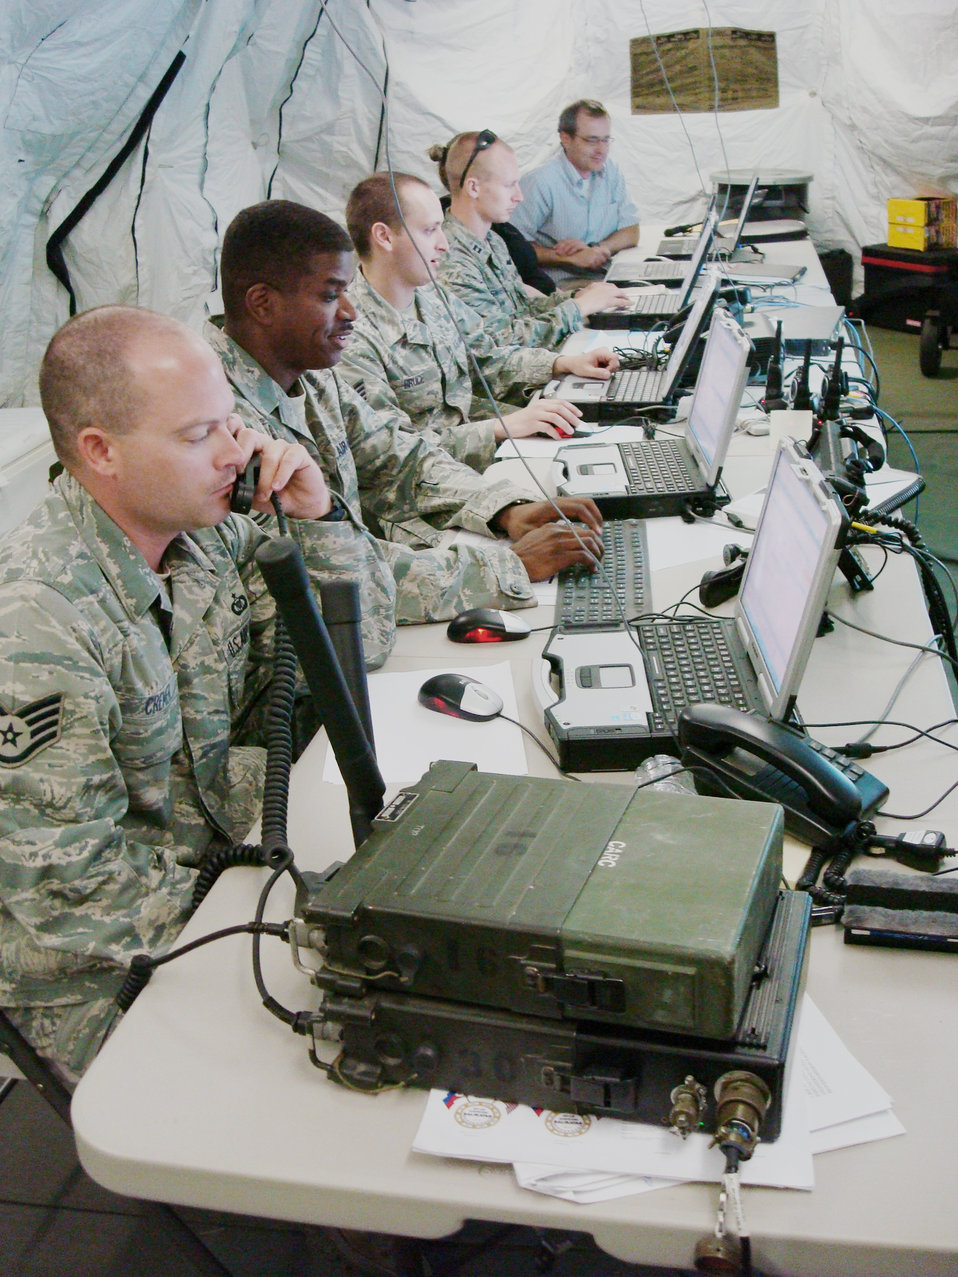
Exercise key to Hawaiian air support center upgrade

Staff Sgt. Justin Cremer (left to right), Tech. Sgt. Christopher Currie, Staff Sgt. Jason Bruce and Capt. Timothy Swierzbin work together using a common operational picture along with Jeff Oakerson to deconflict aircraft participating in Exercise Balikatan March 20, 2010, in the Philippines. Balikatan is an annual bilateral exercise designed to increase interoperability between the U.S. and Philippine air forces, and exercises the two nation's ability to operate together when responding to natural disasters. The Airmen are from the 25th Air Support Operations Squadron at Joint Base Pearl Harbor-Hickam, Hawaii, and Mr. Oakerson is from CACI International Inc.